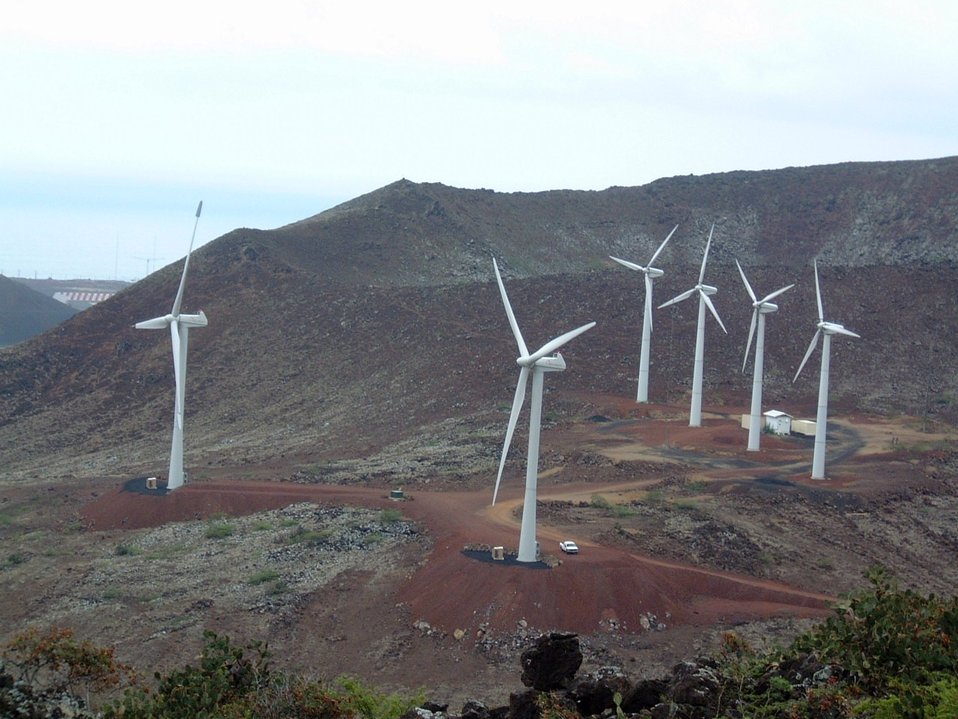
Ascension Island Wind Farm, located about 500 miles south of the equator in the Atlantic Ocean, halfway between South America and Africa.